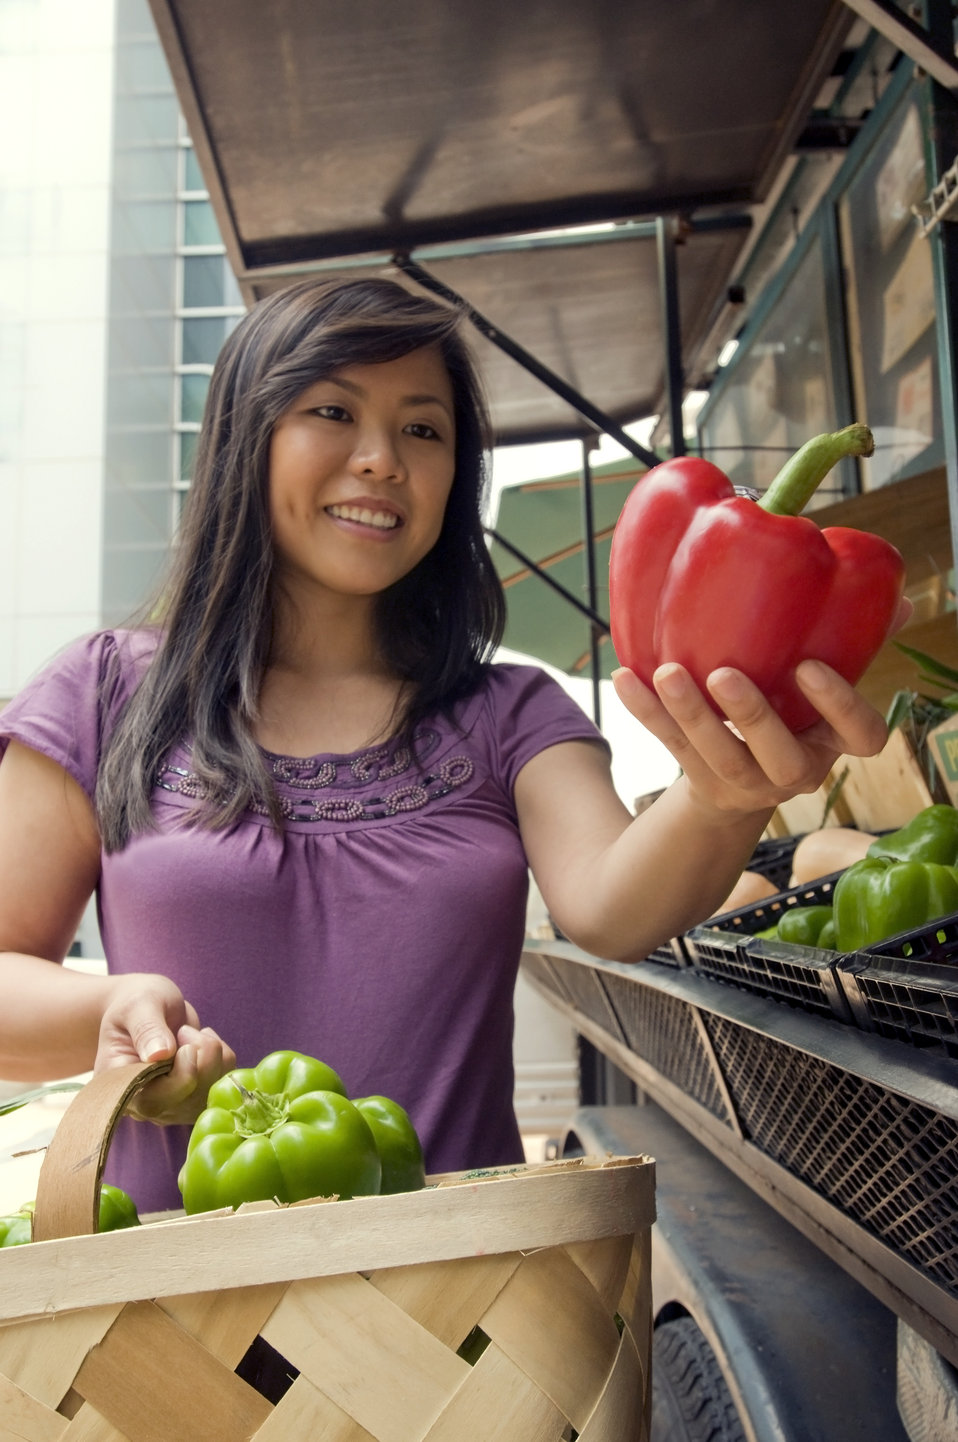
This woman was photographed as she was shopping for groceries at a mobile Georgian farmers market at a point in her activity where she was picking out a bright red, ripe bell pepper from a plastic basket container in the market's produce section. Here she appears quite satisfied with her choice, as she holds her find in her left hand before adding it to her woven wooden basket.